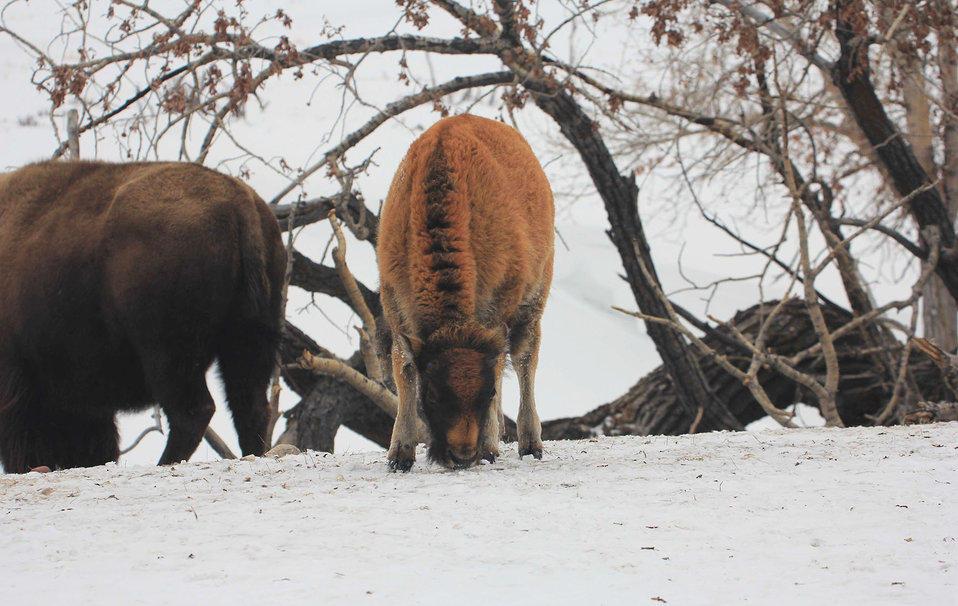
A Late Birthday

A bison calf still retains its reddish color in February, indicating it was born much later than the traditional spring calving season.

Credit: USFWS / Ann Hough, National Elk Refuge volunteer